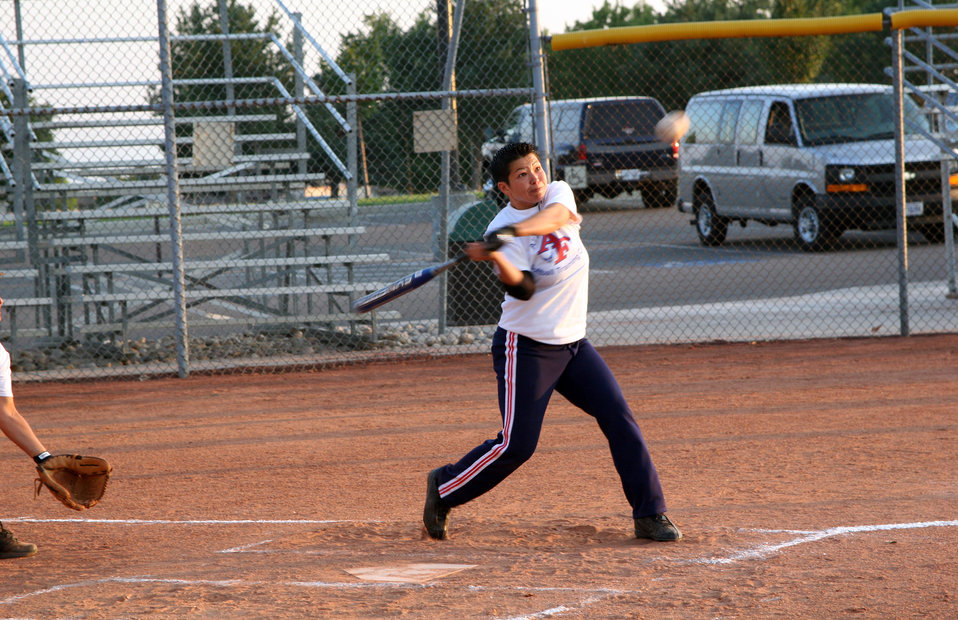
Softball: Airmen to represent Air Force in tournament

Staff Sgt. Darleen Rayburn takes a swing during tryouts for the 2007 All-Armed Forces Women's Softball Championship to be held Sept. 18 to 20 at Hill Air Force Base, Utah. Sergeant Rayburn is stationed at Kadena Air Base, Japan.